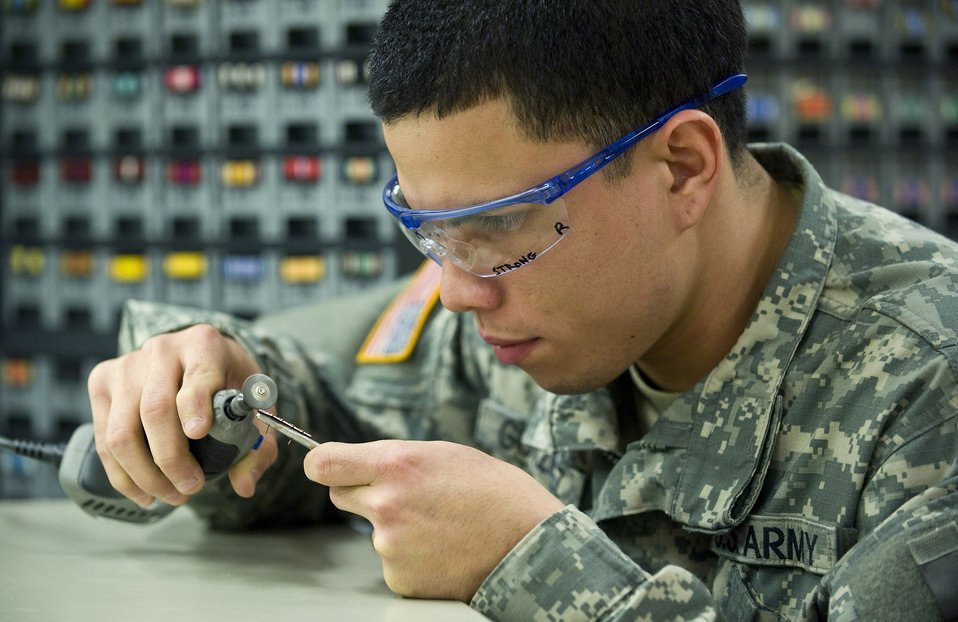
Air Force Mortuary Affairs Operations Center

Specialist Xavier Gonzalez, a mortuary affairs specialist, polishes the decorations of a fallen soldier. Servicemembers working in the uniform section of the Air Force Mortuary Affairs Operations Center at Dover Air Force Base, Del., prepare uniforms for the fallen heroes and work with military escorts for the dignified-transfer-of-remains process. Specialist Gonzalez is deployed from the Army Reserve, 311th uartermaster Company, Puerto Rico.